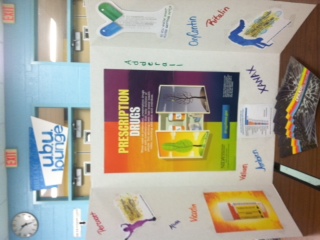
NDFW in Philadelphia, PA

2013 NDFW display by Shalom at Neumann Goretti H.S., NDFW in Philadelphia, PA.